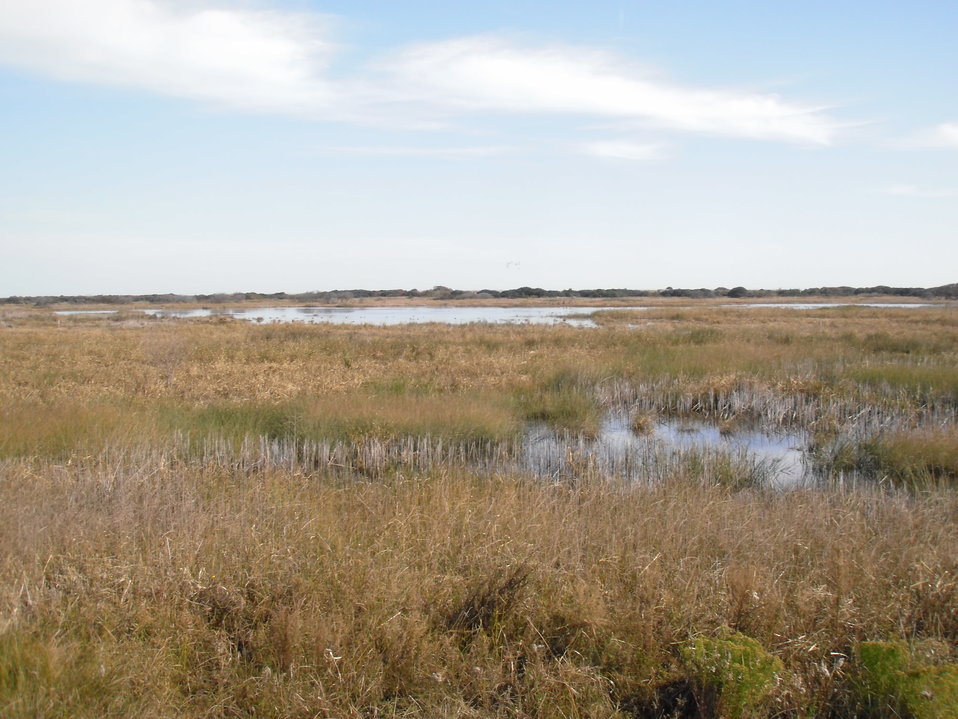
Marsh at Back Bay National Wildlife Refuge in Virginia.